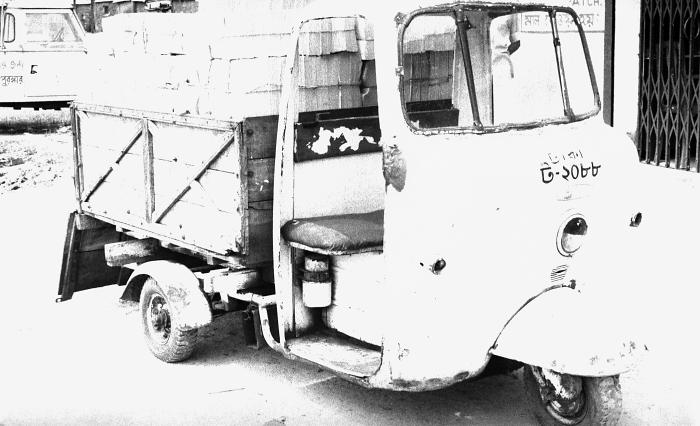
Photographed in 1975, this truck was in the process of delivering leaflets to surrounding Bangladesh townships. During the Bangladesh smallpox eradication campaign, information dissemination was one of the key factors involved in the effort's successful outcome.